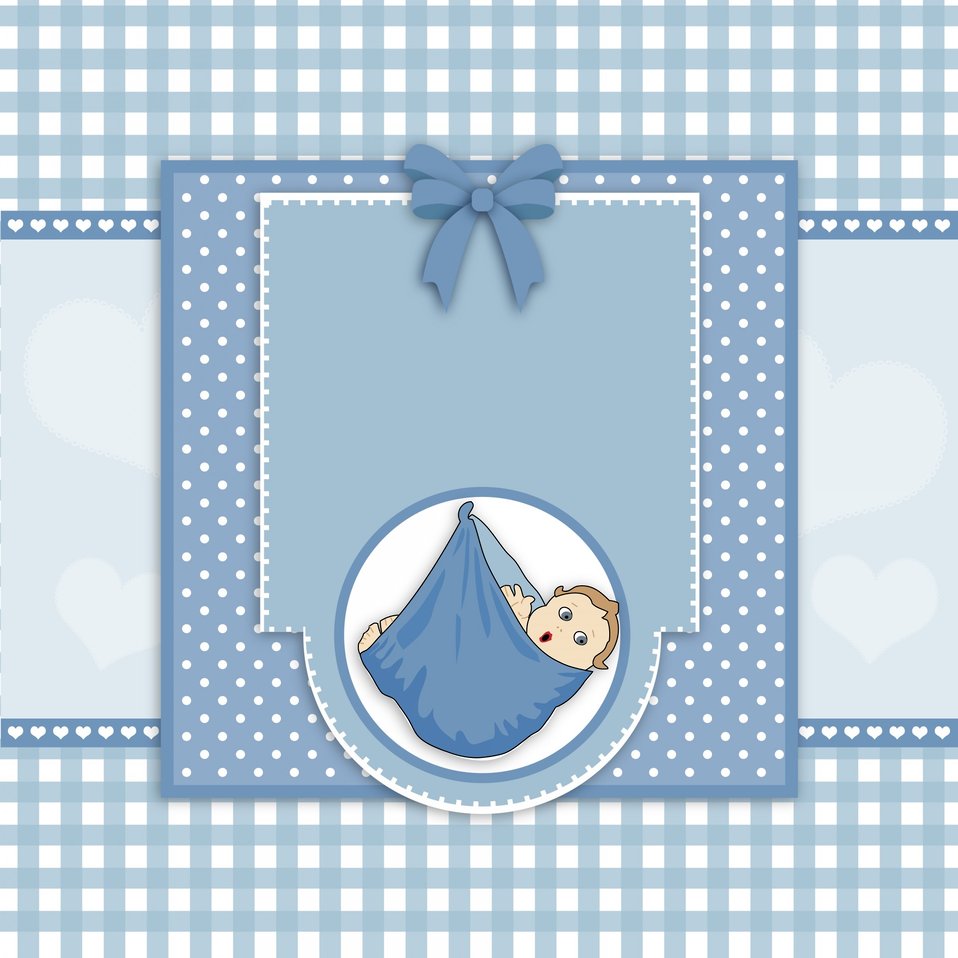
Baby boy card cute

Cute baby boy card template with blue gingham checks and hearts frame.